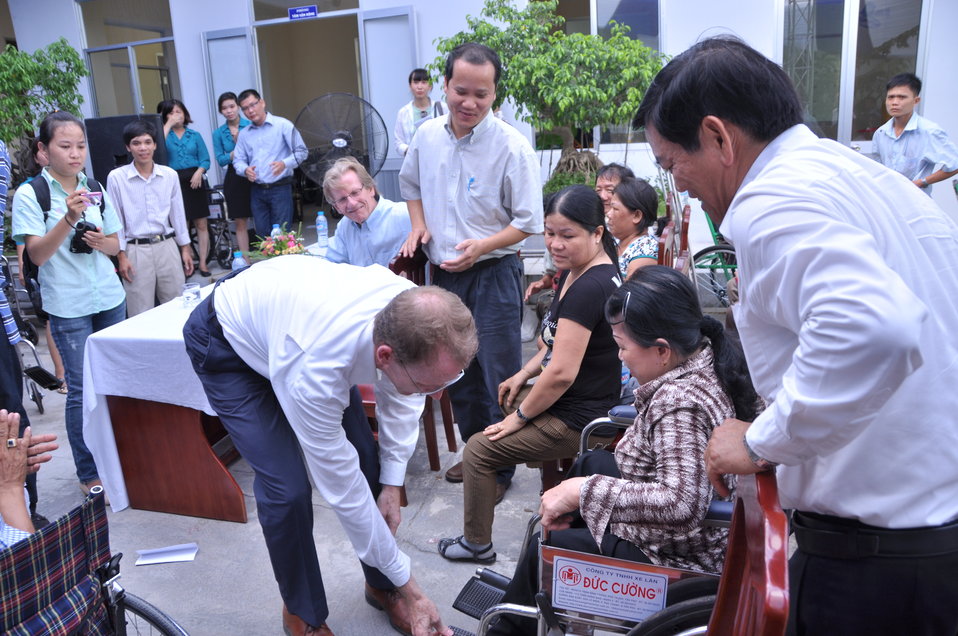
USAID Project Supports Rehabilitation Department for Children and Wheelchair Distribution in Danang

Beneficiaries in Danang, Vietnam, receive wheelchairs.